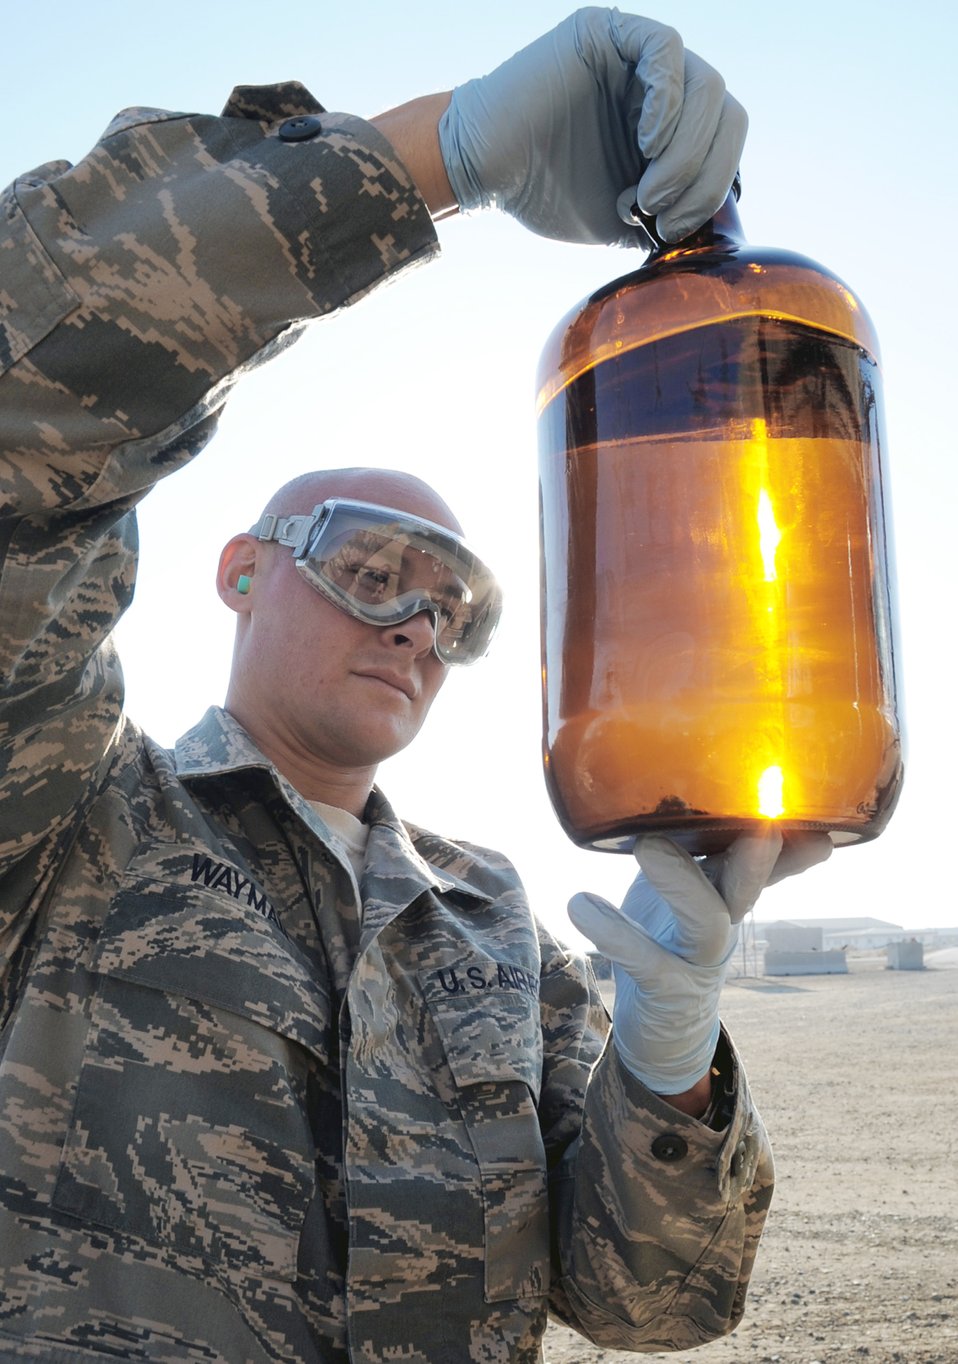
Airmen making a difference one gallon at a time

Staff Sgt. Craig Wayman checks a sample of fuel from a fuels truck during operations at a base in Southwest Asia Jan. 6, 2010. Sergeant Wayman is a fuels laboratory technician with the 380th Expeditionary Logistics Readiness Squadron..